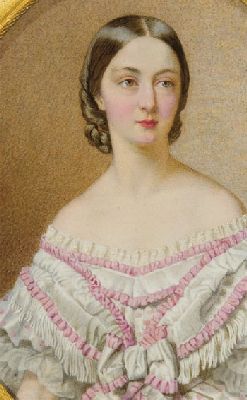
Francoise, duchesse de chartres. jpg